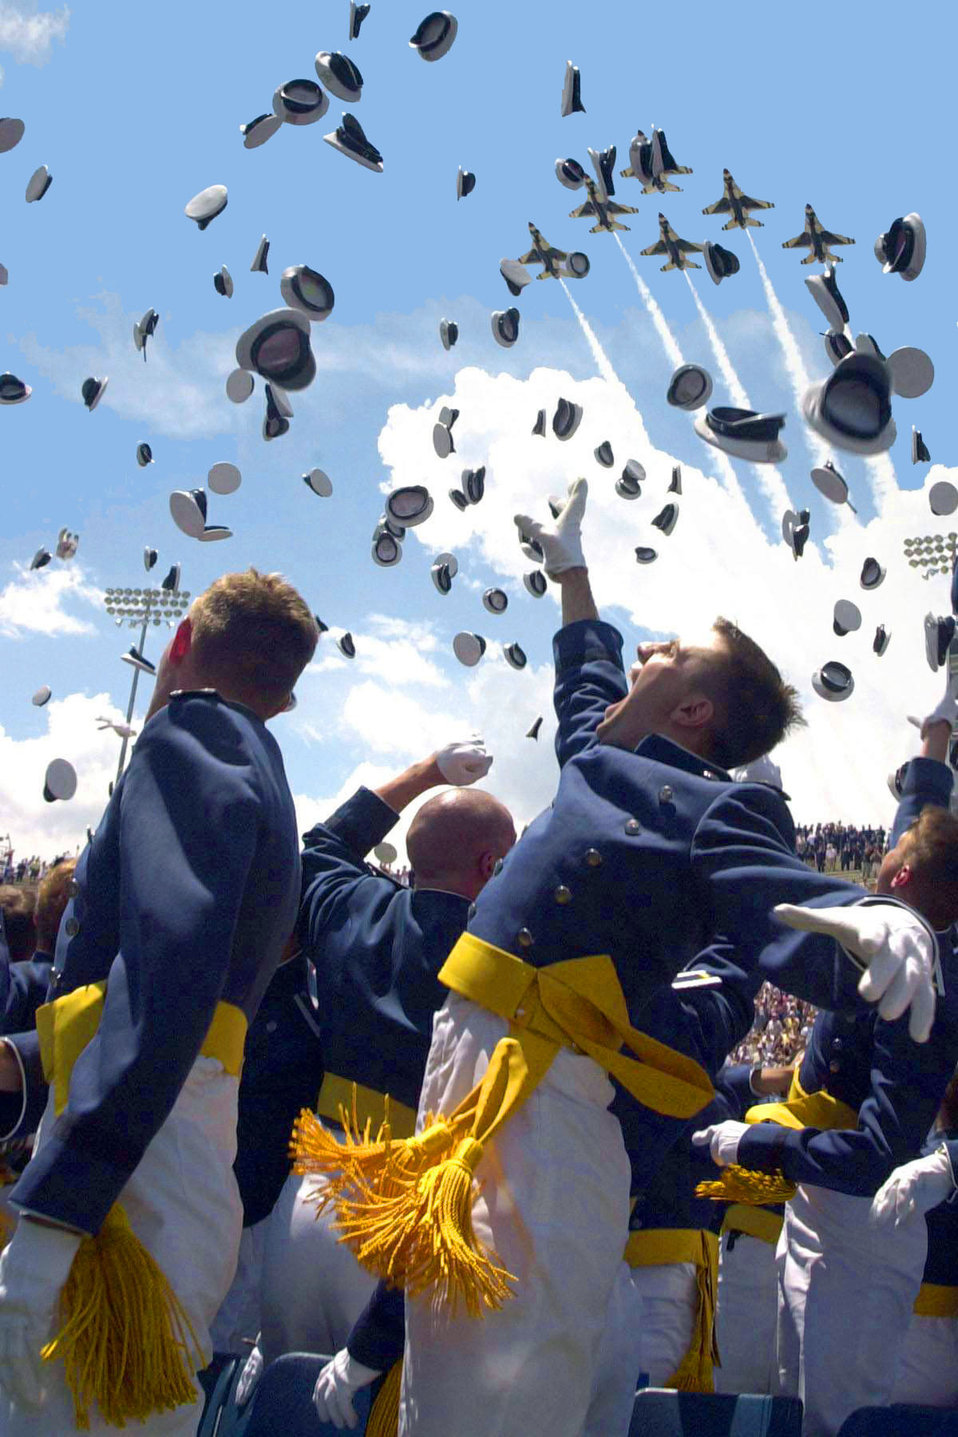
Hats off!

U.S. AIR FORCE ACADEMY, Colo. -- Cadets of the Air Force Academy Class of 2003 celebrate at graduation ceremonies here May 28 as the Air Force Thunderbirds fly overhead. The 974 students marked the academy's 45th graduating class.